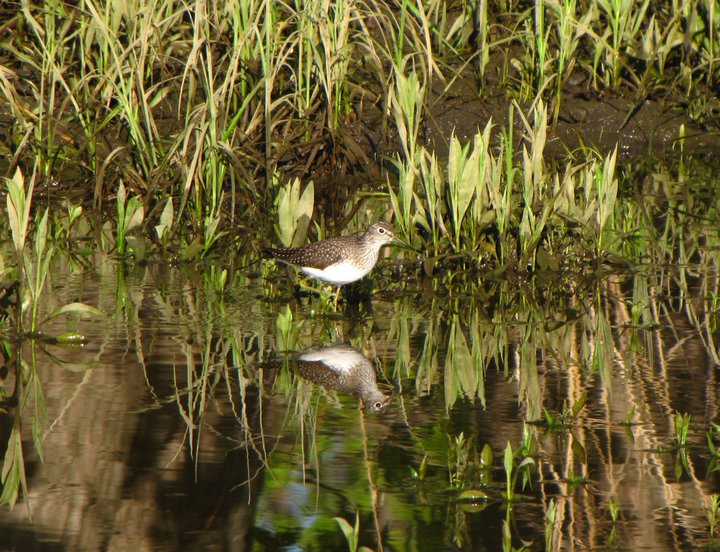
solitary sandpiper

Port Louisa National Wildlife Refuge